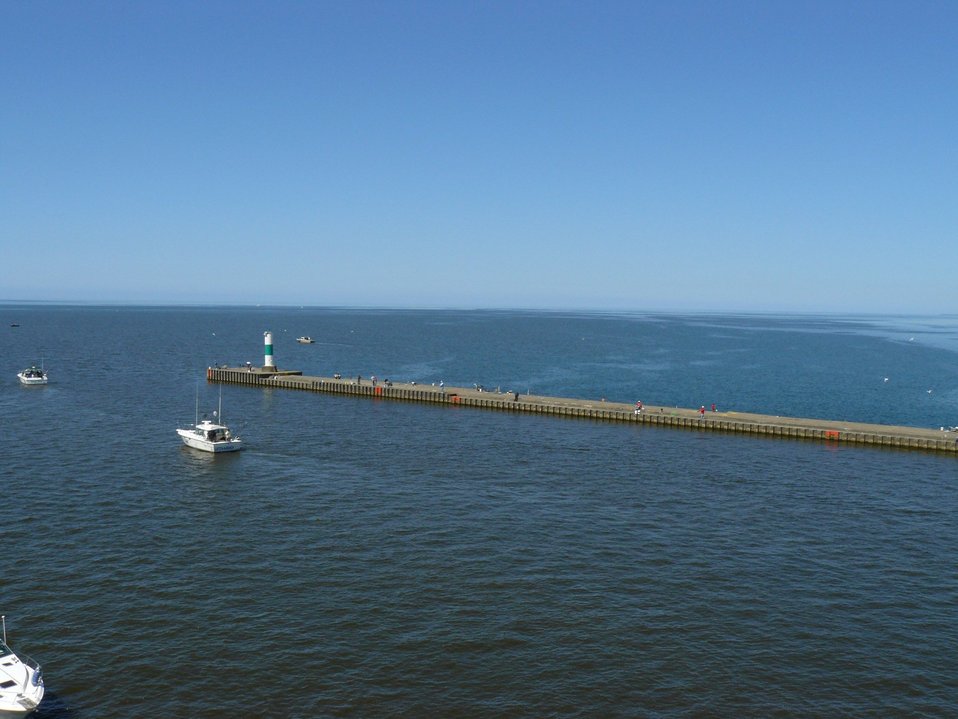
Lake Michigan